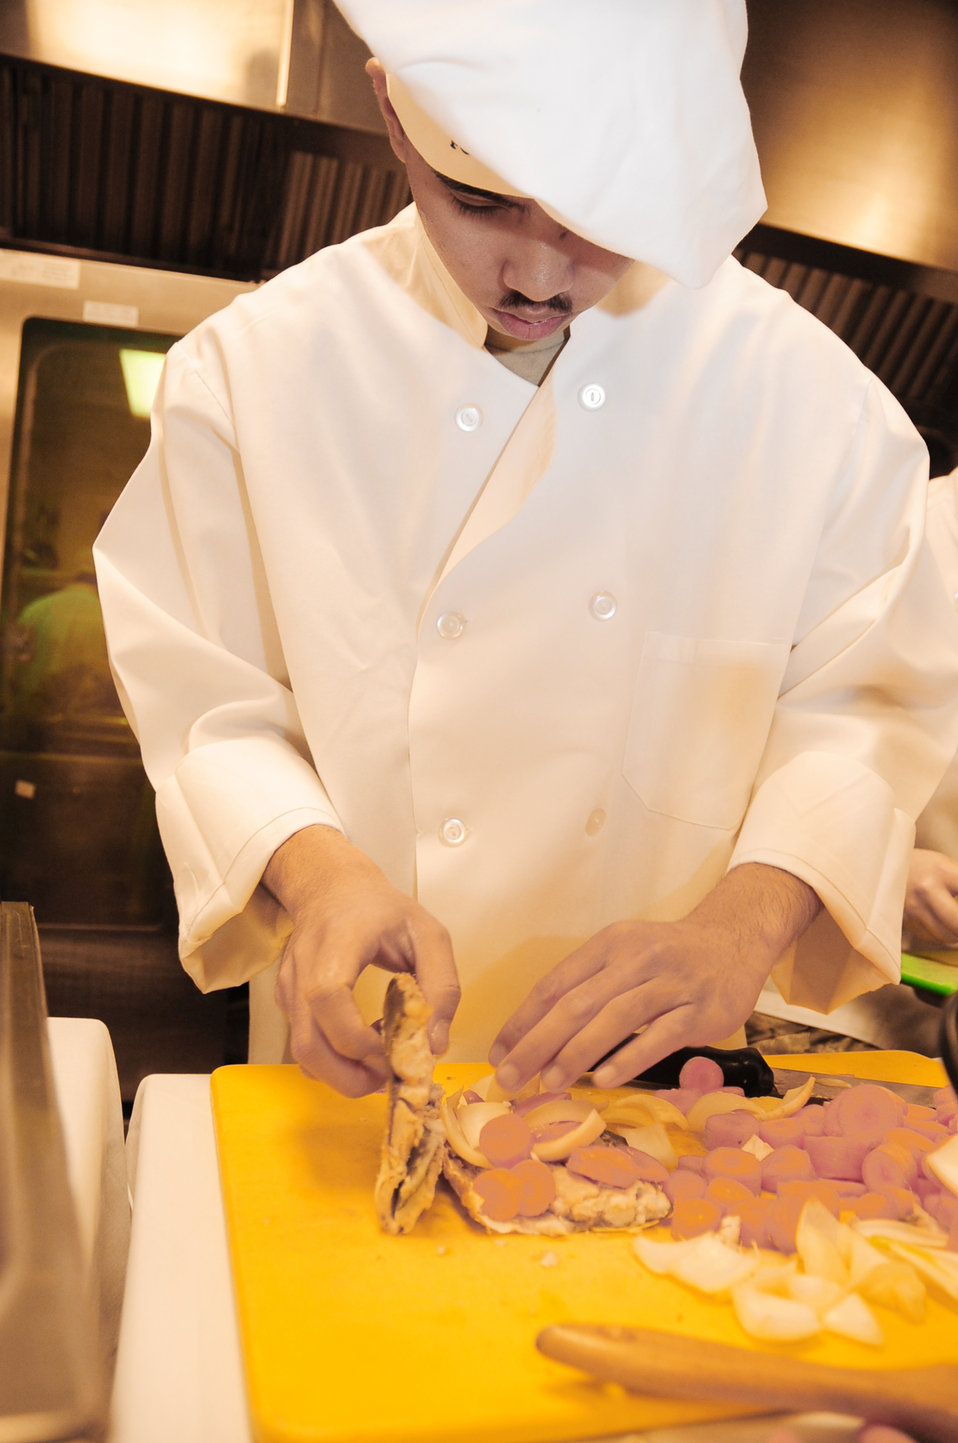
Ellsworth Airmen participate in cooking competition

Airman 1st Class Michael Azares stuffs a fillet milkfish with an assortment of vegetables and spices during the